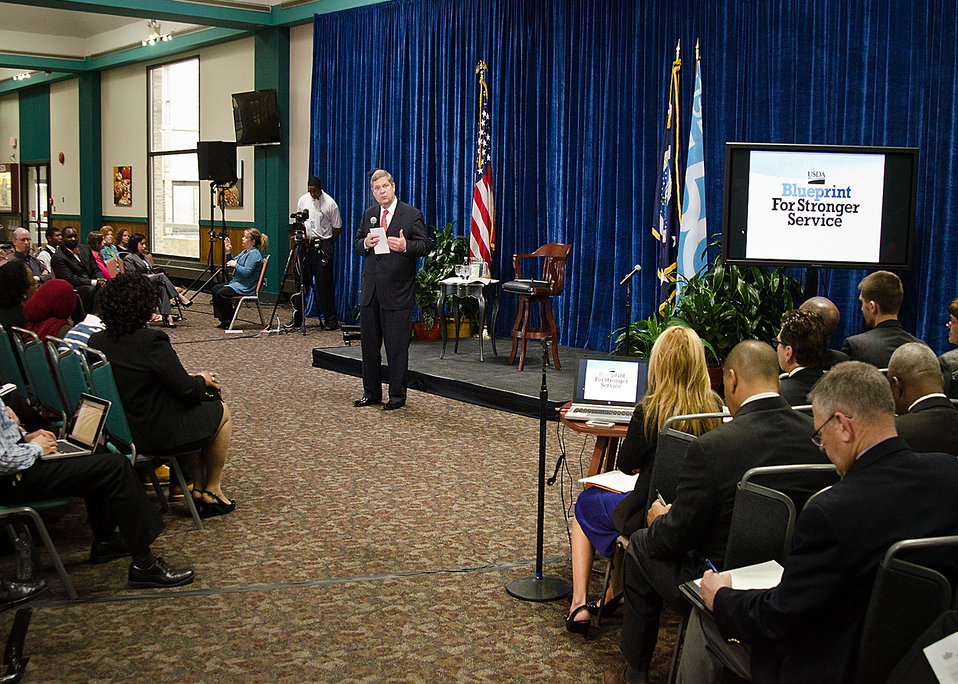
Agriculture Secretary Tom Vilsack offered U. S. Department of Agriculture (USDA) employees the opportunity to ask questions about the Blueprint for Stronger Service Initiative and hear directly from the Secretary Vilsack during the Ask The Secretary event held in the South Building Cafeteria, in Washington, D.C., on Wednesday, March 21, 2012, The Blueprint for Stronger Service Initiative aims to build a modern and efficient service organization that is closely timed with technological innovations - and better suited to respond to 21st century agricultural challenges.